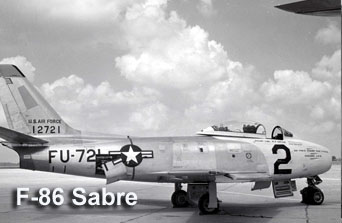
F-86 Sabre flown by Col. Fred Ascani at Edwards Air Force Base, Calif.